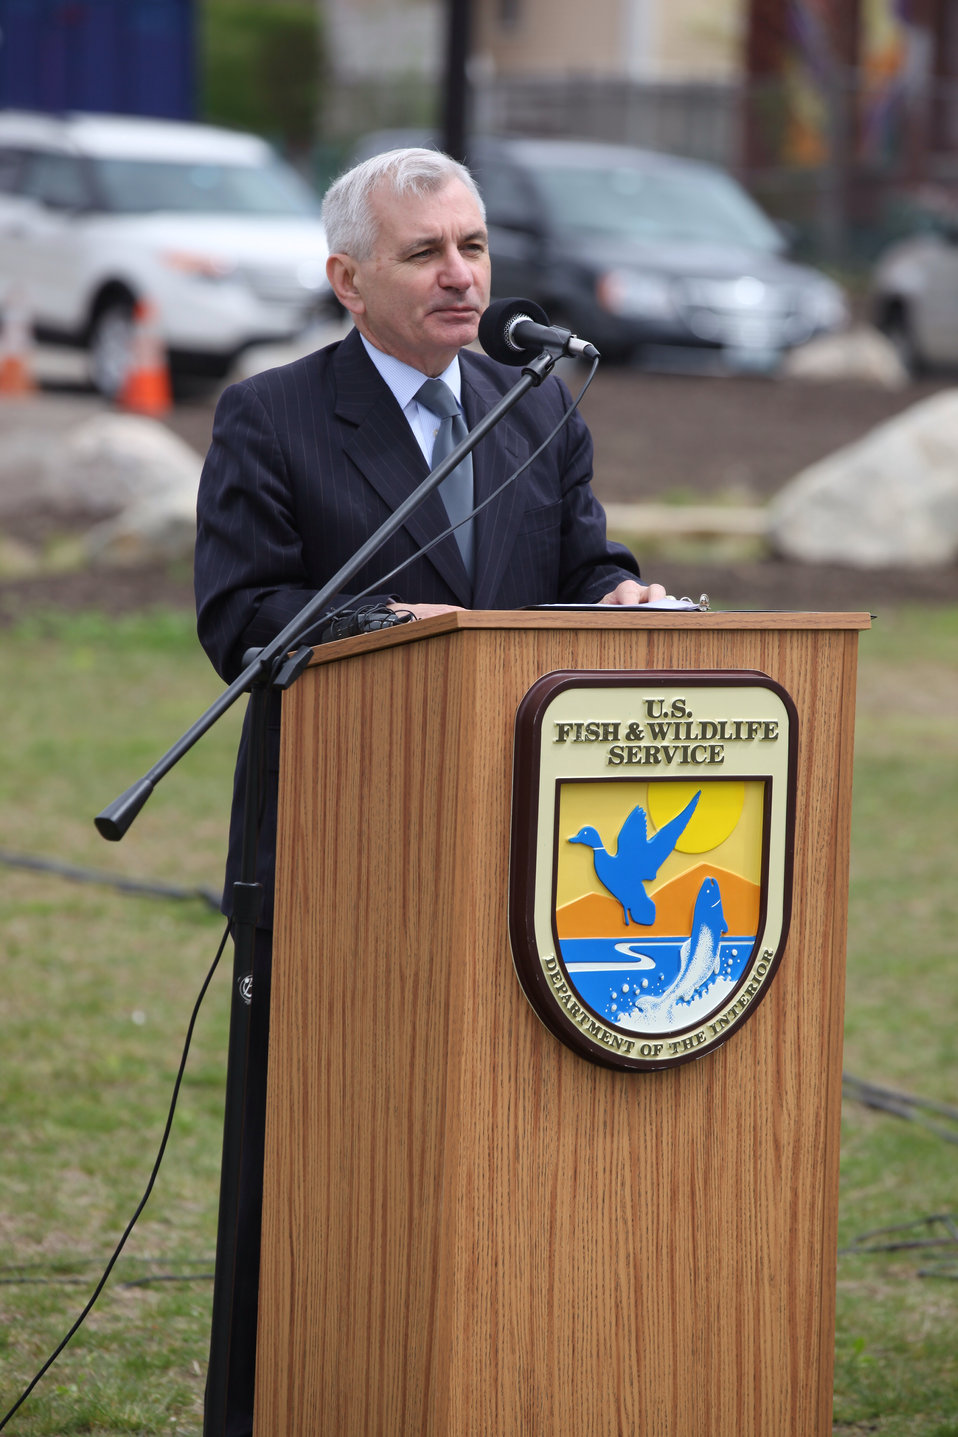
Senator Jack Reed

Rhode Island Senator Jack Reed speaking at the event.